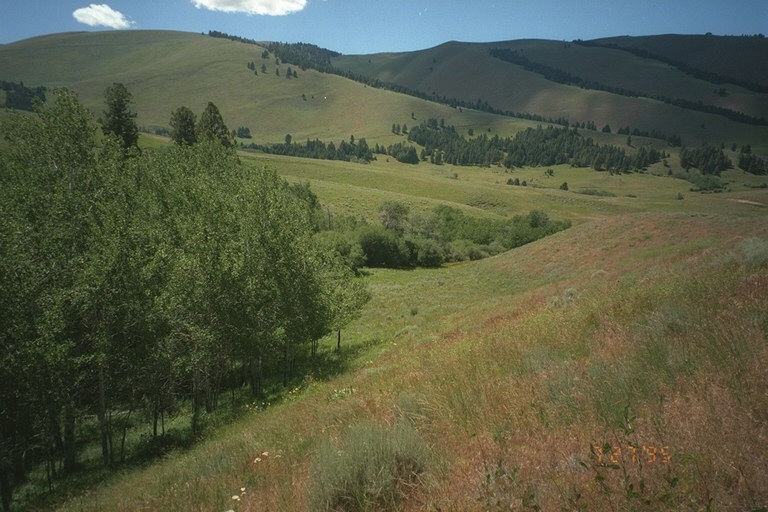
Riparian area Public Lands Salmon Field Office UCSC Upper Columbia Salmon Clearwater District